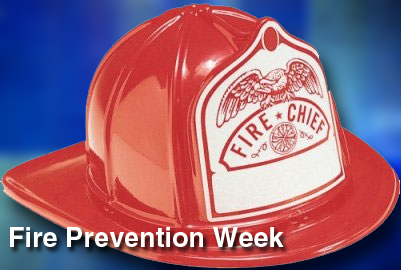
Fire Prevention Week